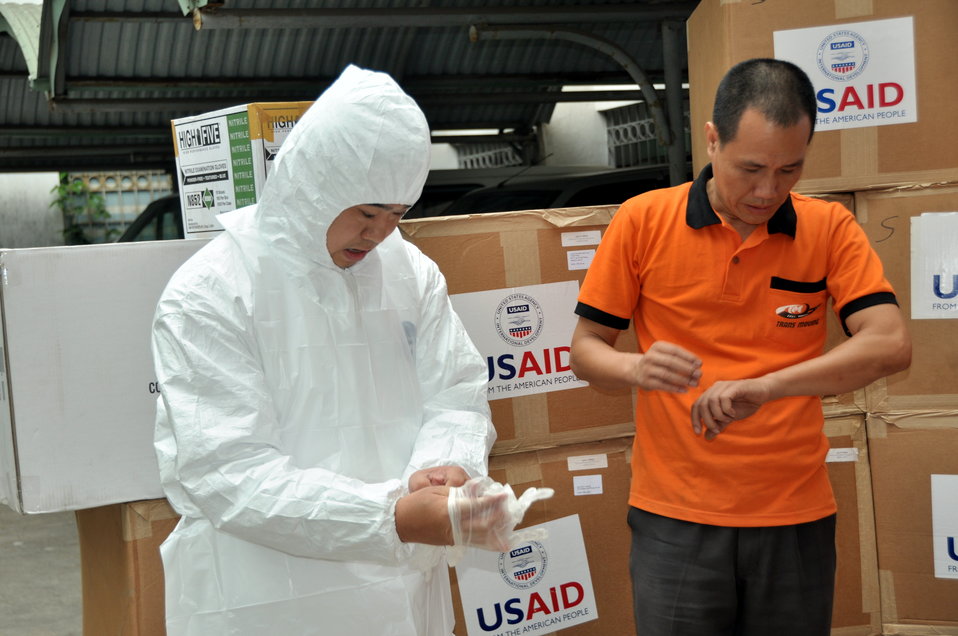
USAID hands over personal protective equipment to the Department of Animal Heath under Vietnam’s Ministry of Agriculture and Rural Development.

Hanoi, November 20, 2013.